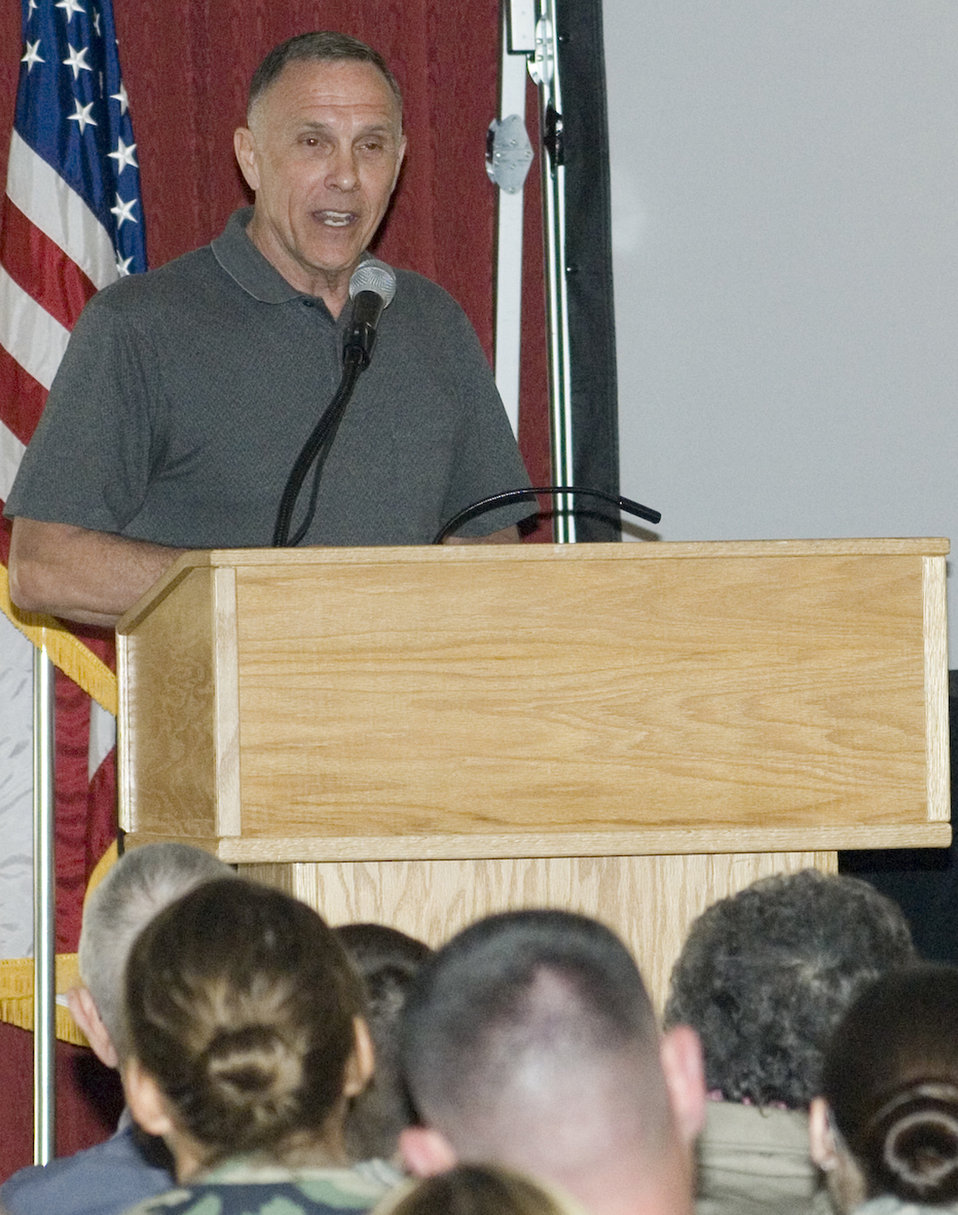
Hanscom heritage event highlights heroes

One of three speakers at the Heritage of Freedom speaker series, retired Air Force Chief Master Sgt. Wayne Fisk recounts his Vietnam-era experiences to a packed crowd April 15 at Hanscom Air Force Base, Mass. The three speakers in this quarterly event discuss their experiences serving in combat or while deployed.